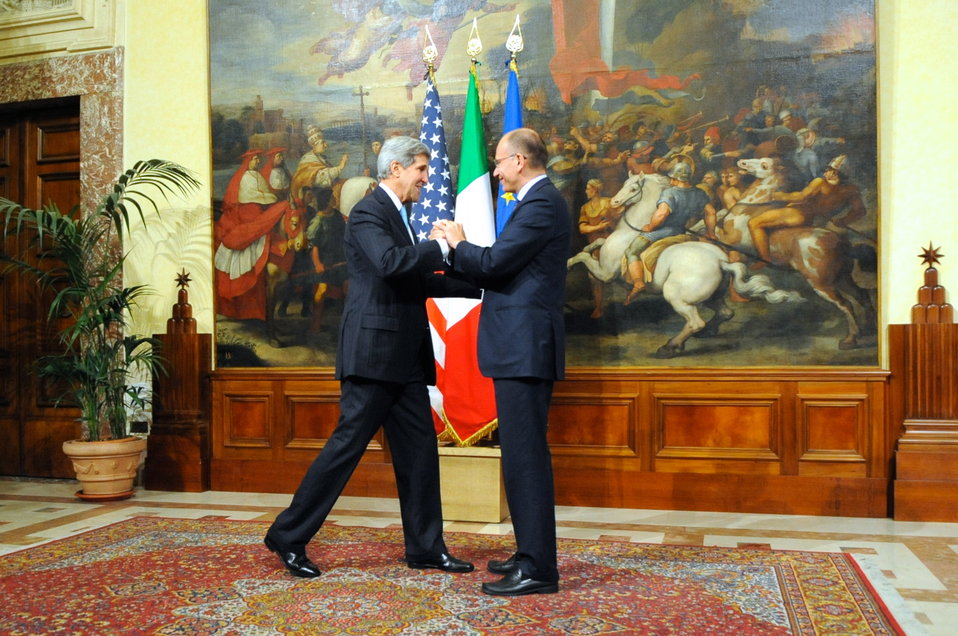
Italian Prime Minister Letta Greets Secretary Kerry

Italian Prime Minister Enrico Letta greets U.S. Secretary of State John Kerry upon his arrival to a meeting in Rome, Italy on October 23, 2013.